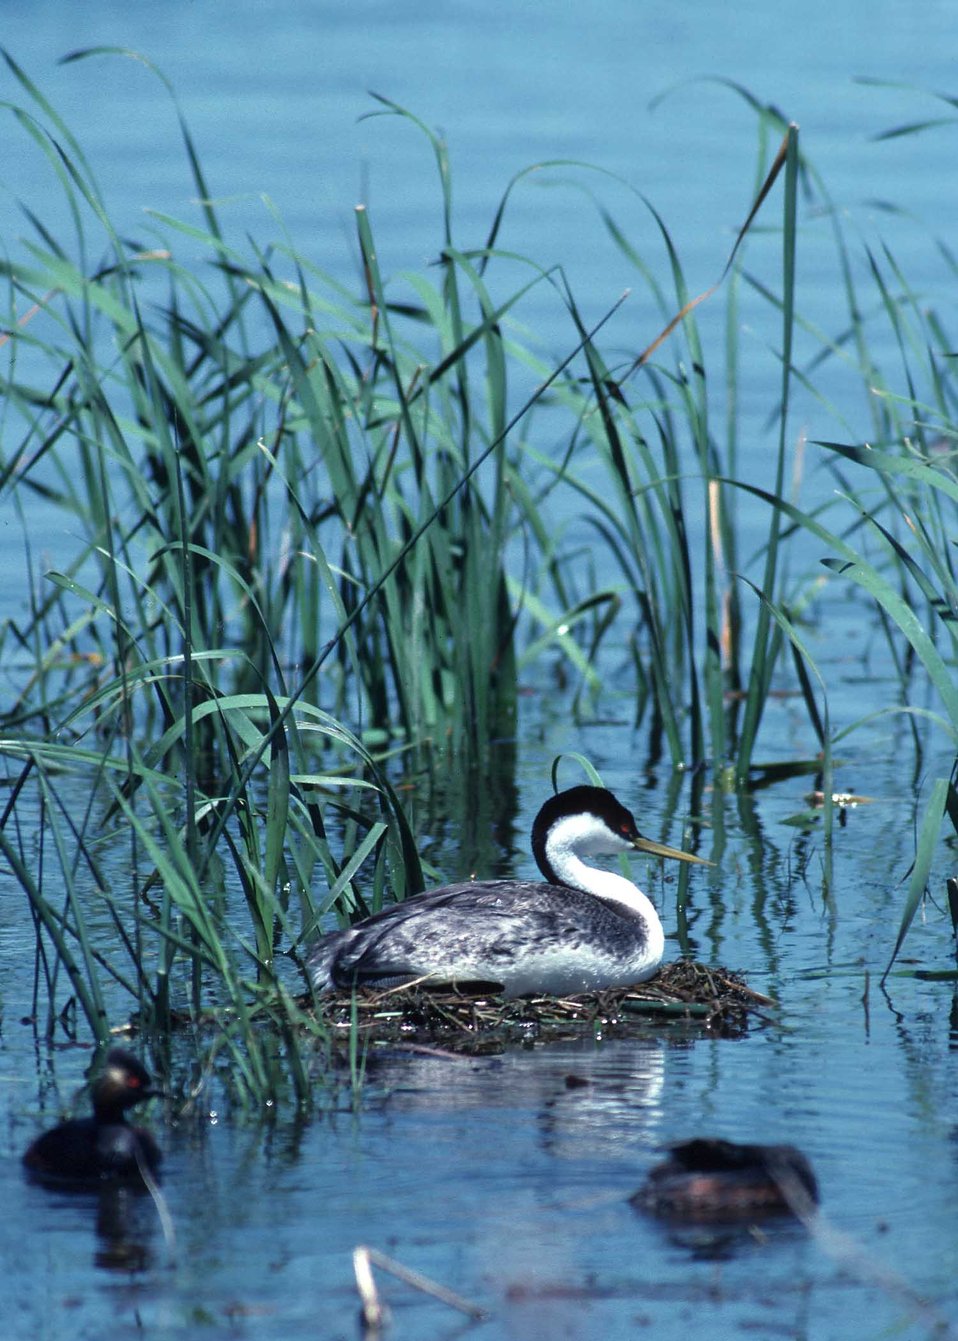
Prarie potholes provide an abundance of vital habitat for wildlife. Here a Western Grebe sits patiently upon her nest.